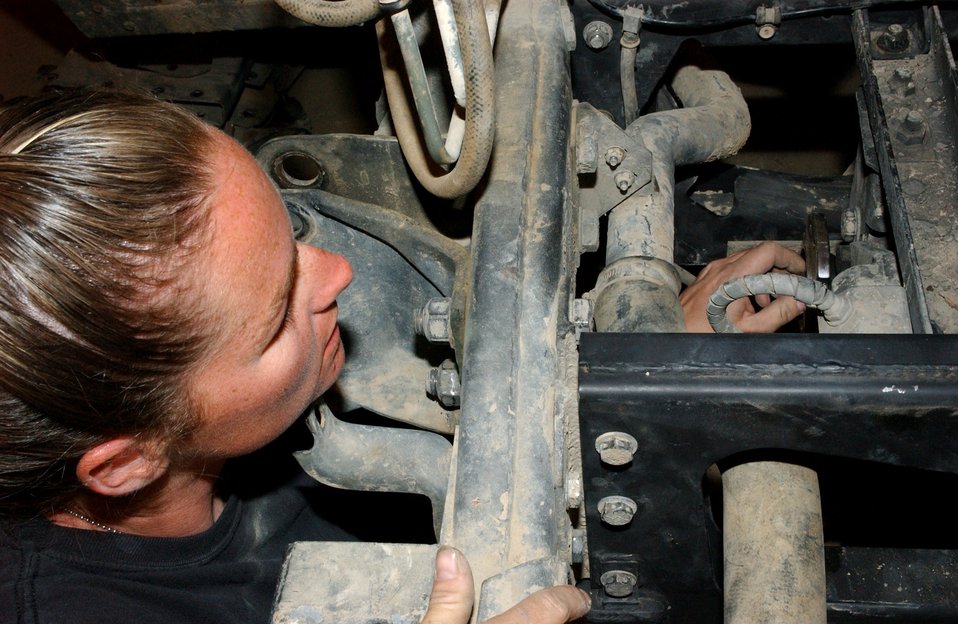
Rough conditions take toll on vehicles

Staff Sgt. Shane Chandler inspects a brake differential for damage on a Humvee at Ali Base, Iraq. Sergeant Chandler is assigned to the 407th Expeditionary Logistics Readiness Squadron vehicle maintenance flight and is deployed from Malmstrom Air Force Base, Mont.